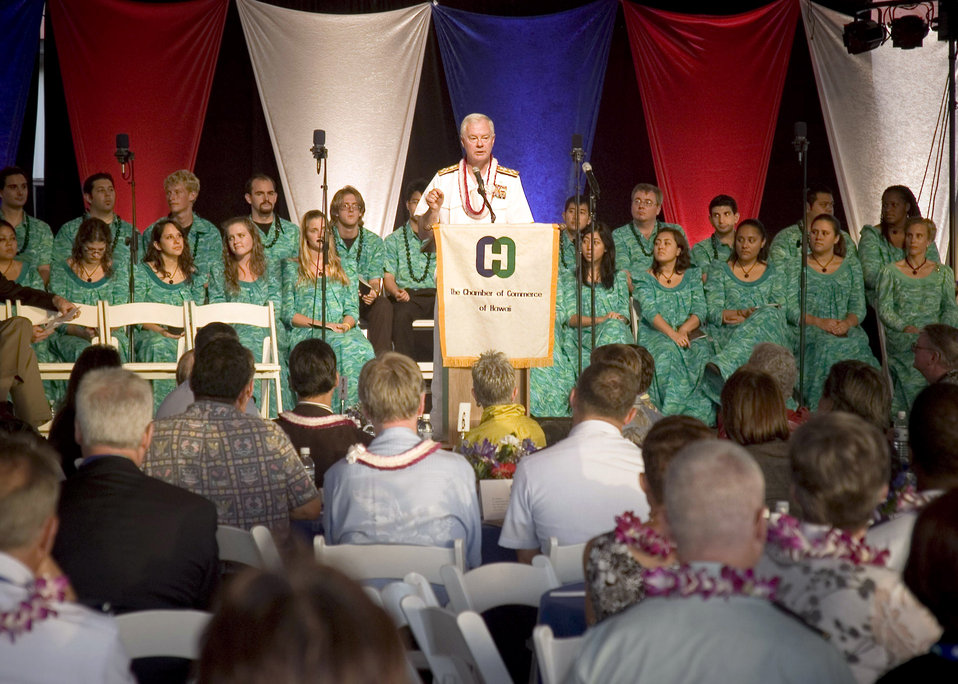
Hawaii kicks off Military Appreciation Month

Navy Adm. Timothy J. Keating speaks at the Hawaii Military Appreciation Month kickoff at the Pacific Aviation Museum on Ford Island May 2 at Pearl Harbor, Hawaii. Admiral Keating is the commander of U.S. Pacific Command.